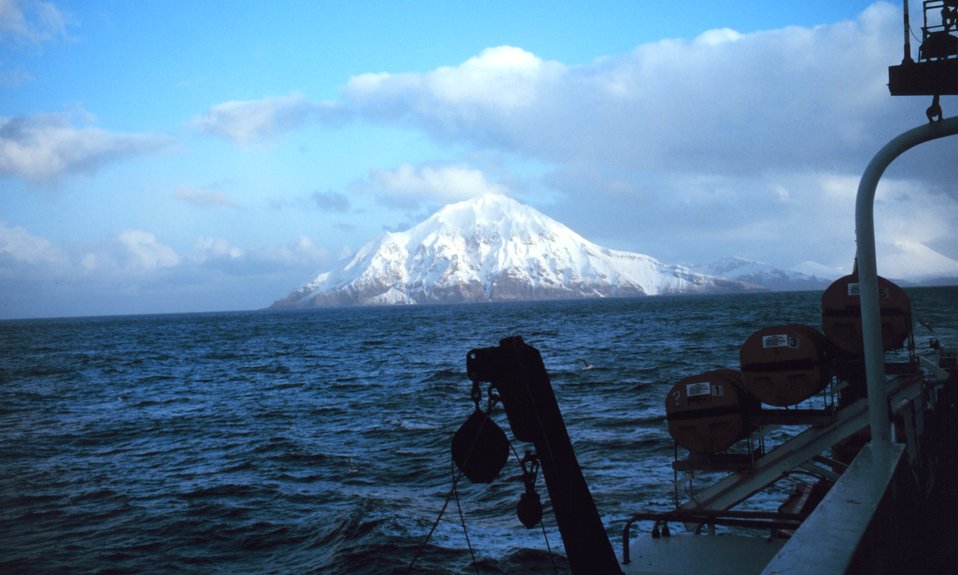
An Aleutian peak and coastline